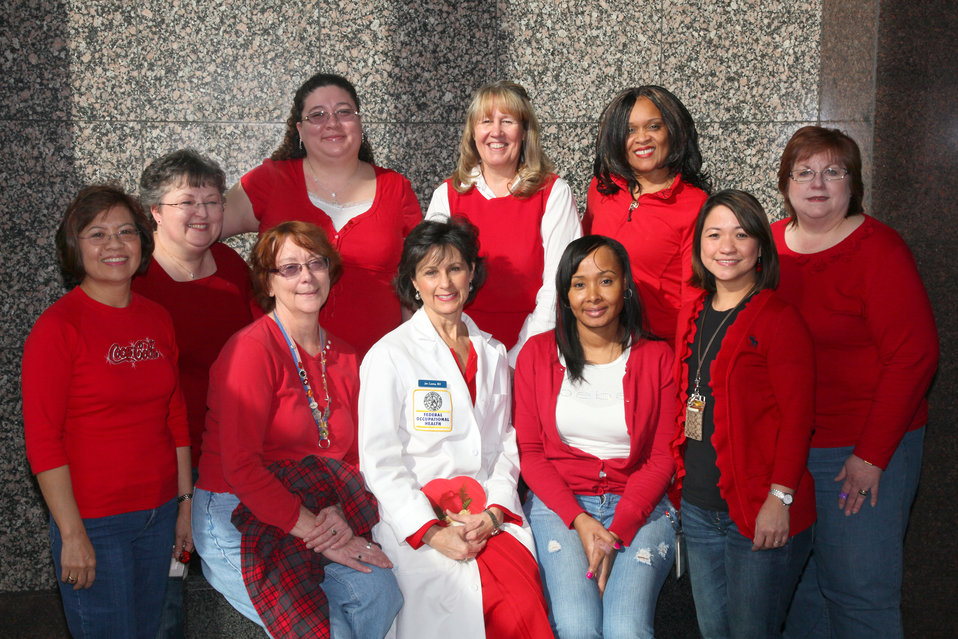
SACRAMENTO, Calif. – Employees from the U.S. Army Corps of Engineers Sacramento District wore red to raise awareness about women’s heart health on National Wear Red Day Feb. 4. The month of February is recognized as Heart Health Month. The campaign reminds Americans that heart disease is the number one killer of women age 20 and over according to the American Heart Association.